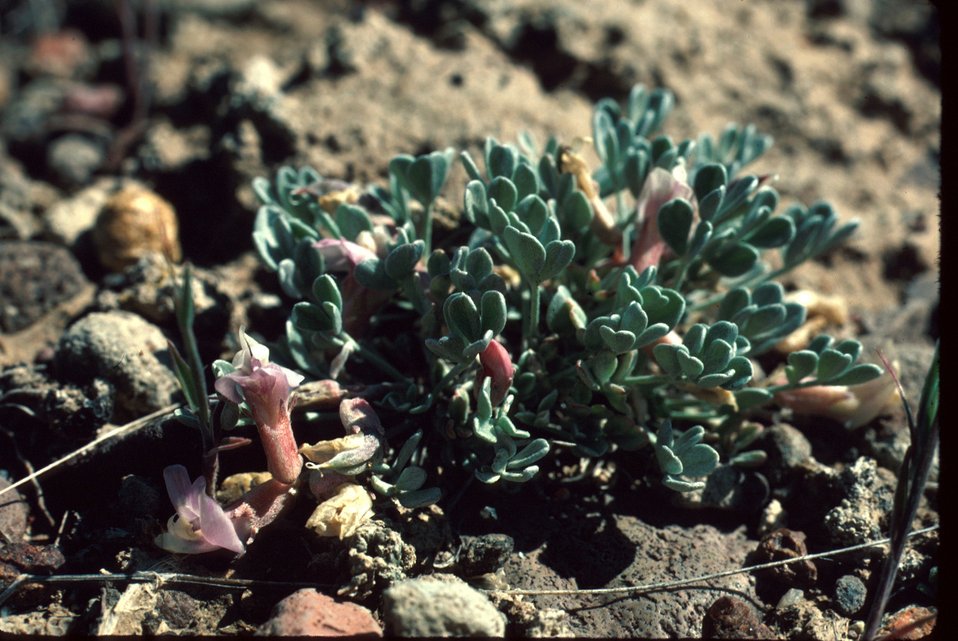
Astragalus calycosus Milkvetch Bruneau, near Corgan Creek Wildflower